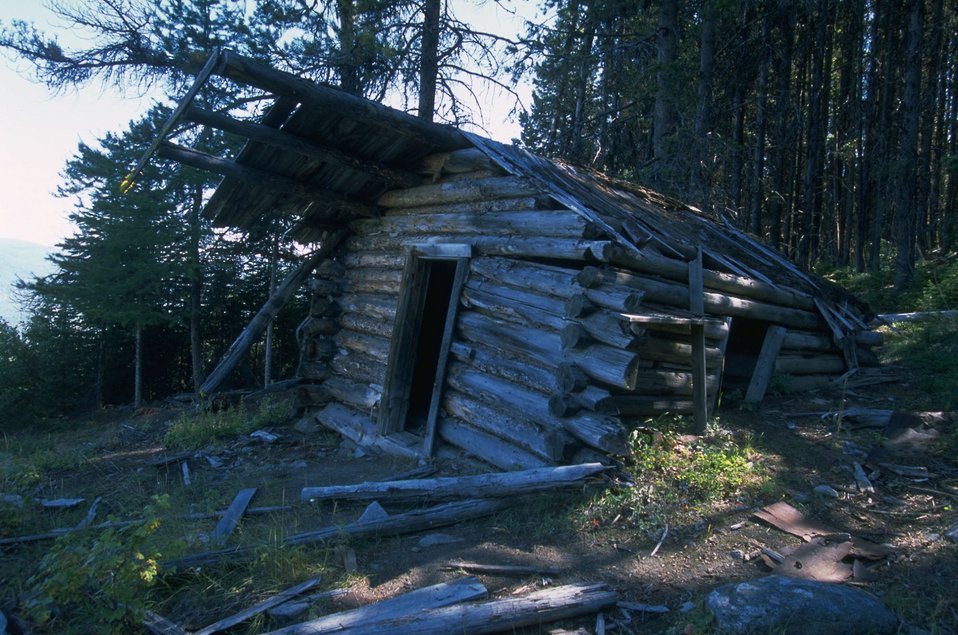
Coloma Ghost Town-collapsed cabin